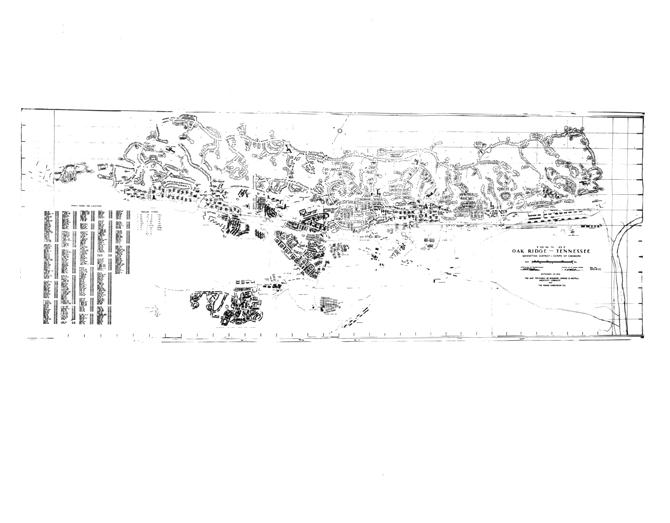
Map Oak Ridge Y-12